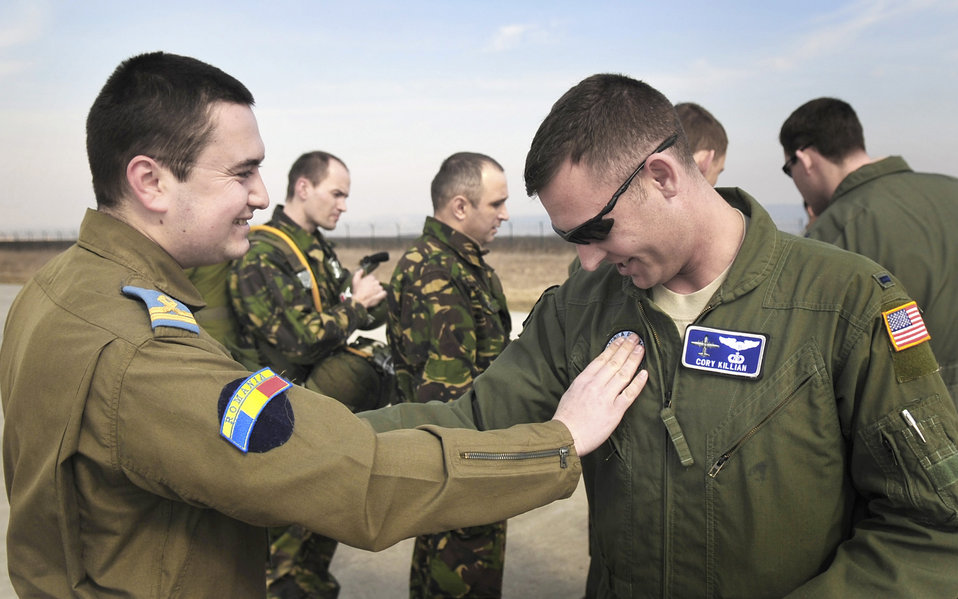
Carpathian Spring 2011

Lt. Daniel Motoroui, a Romanian air force pilot, exchanges a patch with 1st Lt. Cory Killian March 14, 2011, at Campia Turzii, Romania. Lieutenant Killian introduced this tradition to Lieutenant Motoroui after the first leg of their first flying mission of Carpathian Spring 2011, an exercise where members of the U.S. military join their Romanian counterparts to learn from one another and strengthen alliances. Lieutenant Killian is a pilot assigned to the 37th Airlift Squadron.